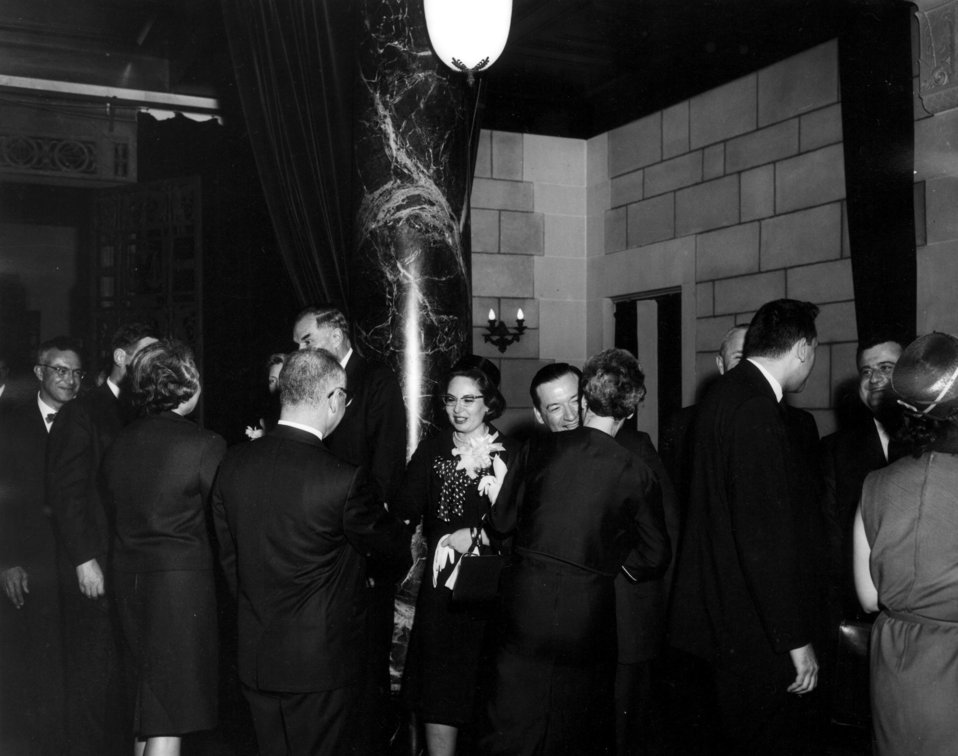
Lawrence Award, 1966.